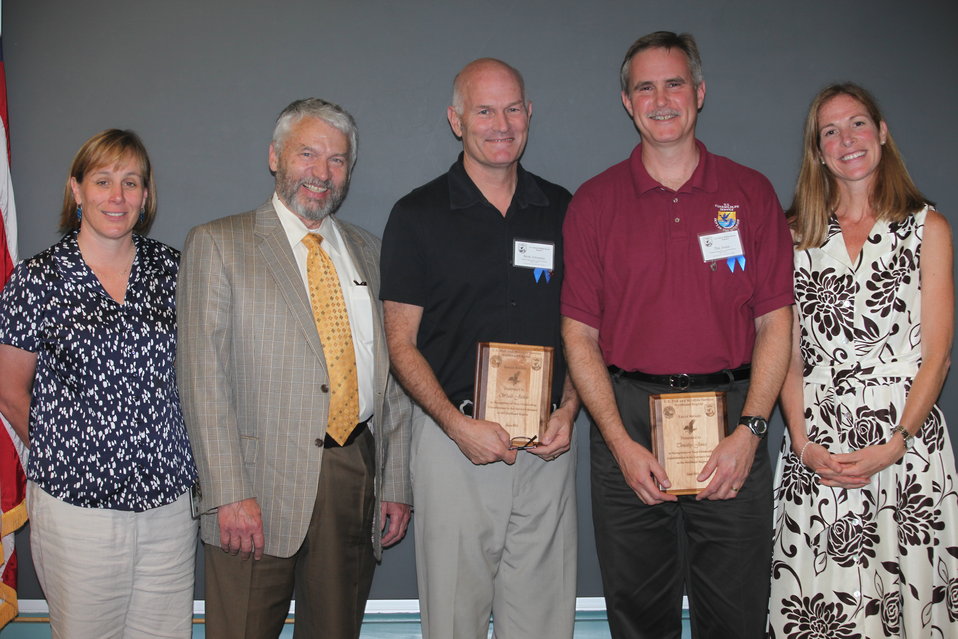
Scott Johnston and Tim Jones recieved the Eagle Award along with Melanie Steinkamp (not pictured) for work with Migratory Birds.
From left to right: Deputy Regional Director Deb Rocque, Deputy Director Rowan Gould, Scott Johnston, Tim Jones and Regional Director Wendi Weber